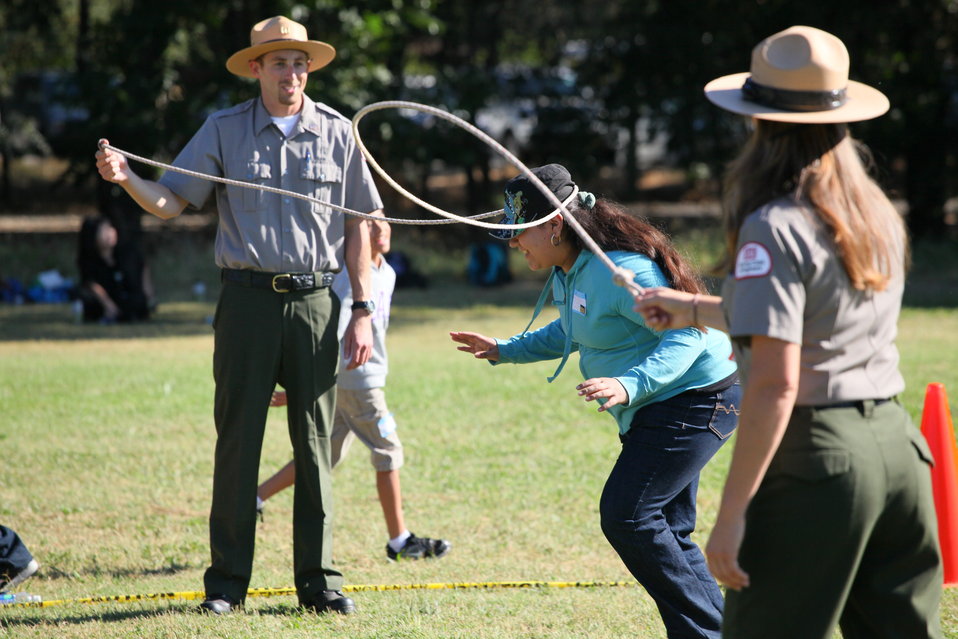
America’s Great Outdoors event at the Effie Yeaw Nature Center

Children from Maple Elementary School enjoy some exercise outdoors while learning about nature at the Effie Yeaw Nature Center in Carmichael, Calif., Sept. 27, 2011. U.S. Army Corps of Engineers park rangers taught the life cycle of the salmon with a jump rope game, where getting tangled in a rope represents the hazards of water turbines to the fish. The event was in support of President Barack Obama’s America’s Great Outdoors Initiative, established in April 2010, to reconnect the American people with the outdoors.